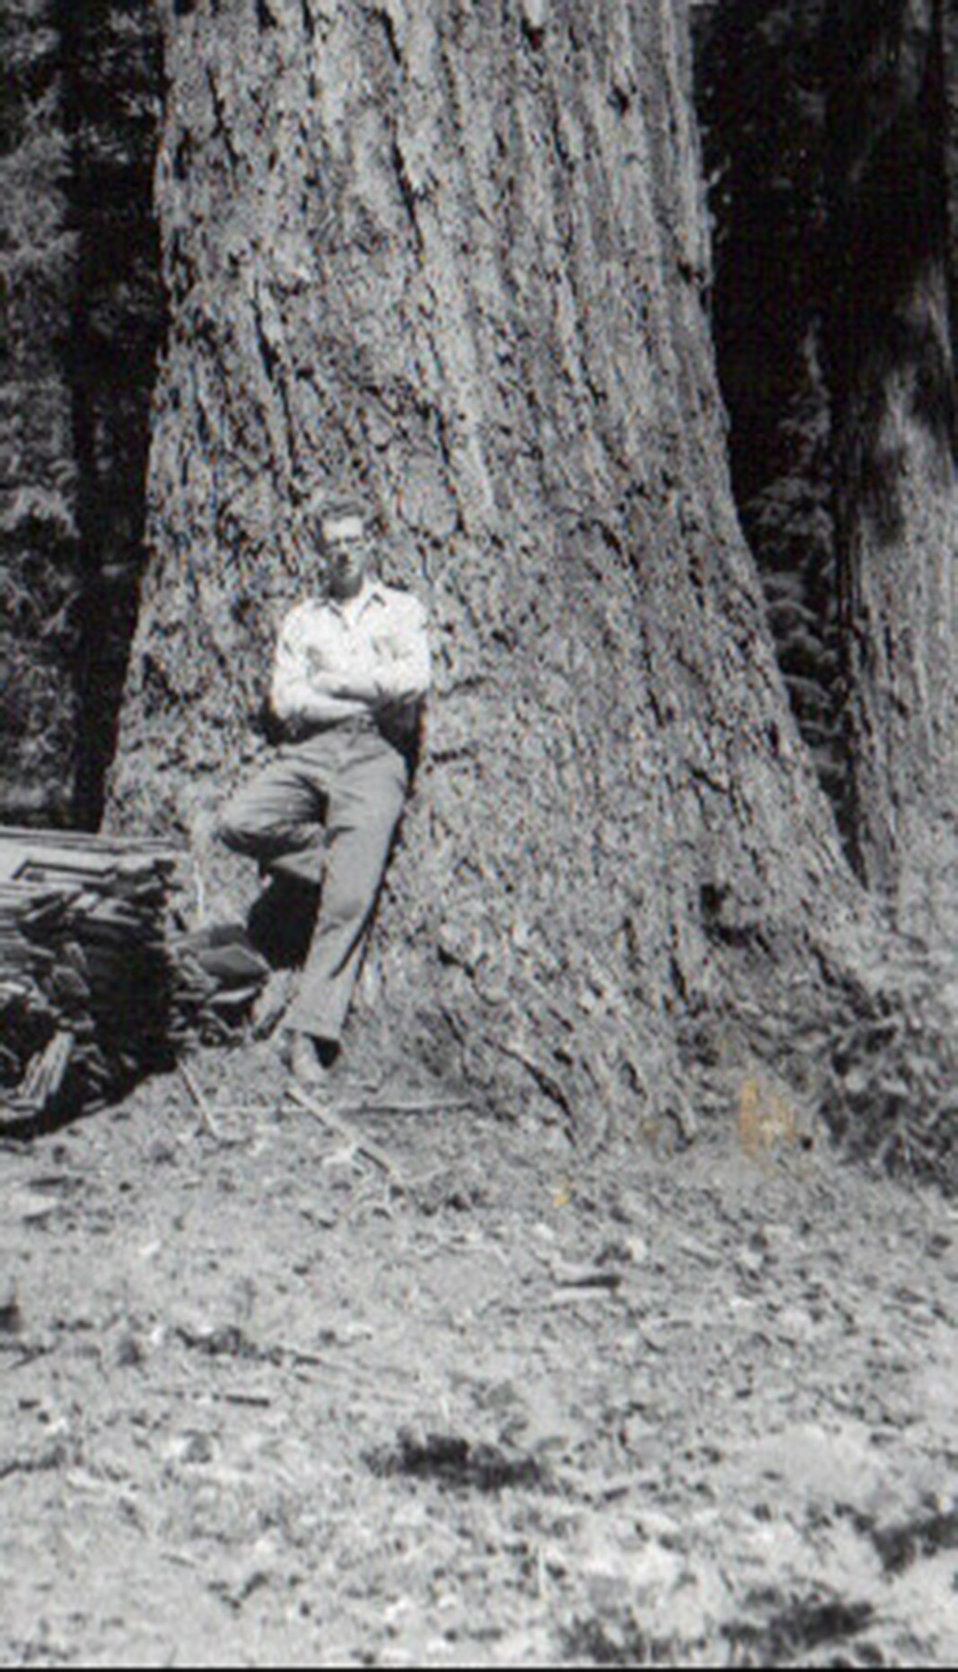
Fitzgerald Bagby

Dick Fitzgerald rests against a towering Douglas fir at Bagby Hot Springs on the Mount Hood National Forest where he was serving as a junior forester during a summer day in 1957.